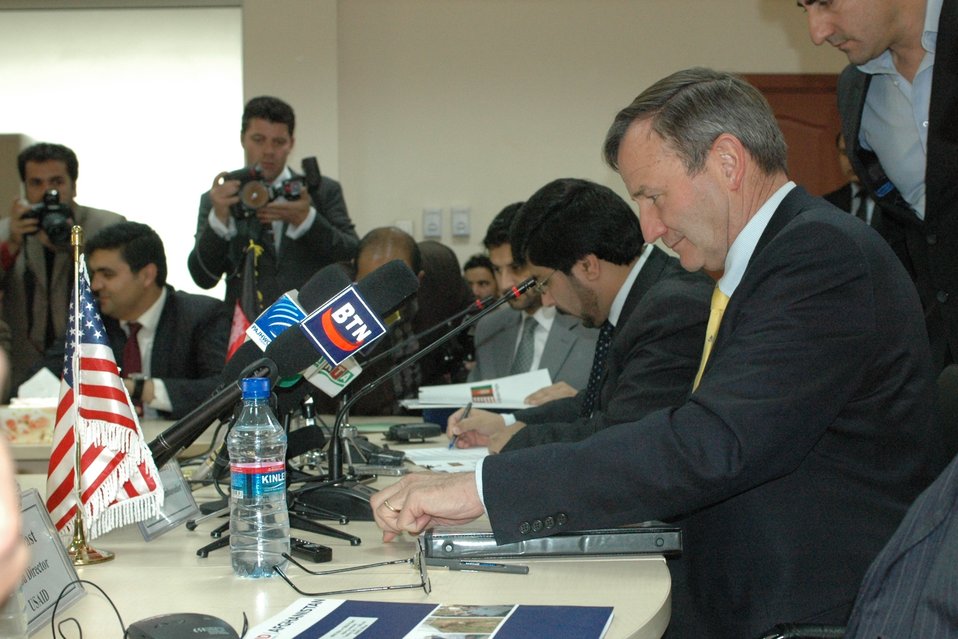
Community Based Stabilization Grants Ceremony, December 7, 2010